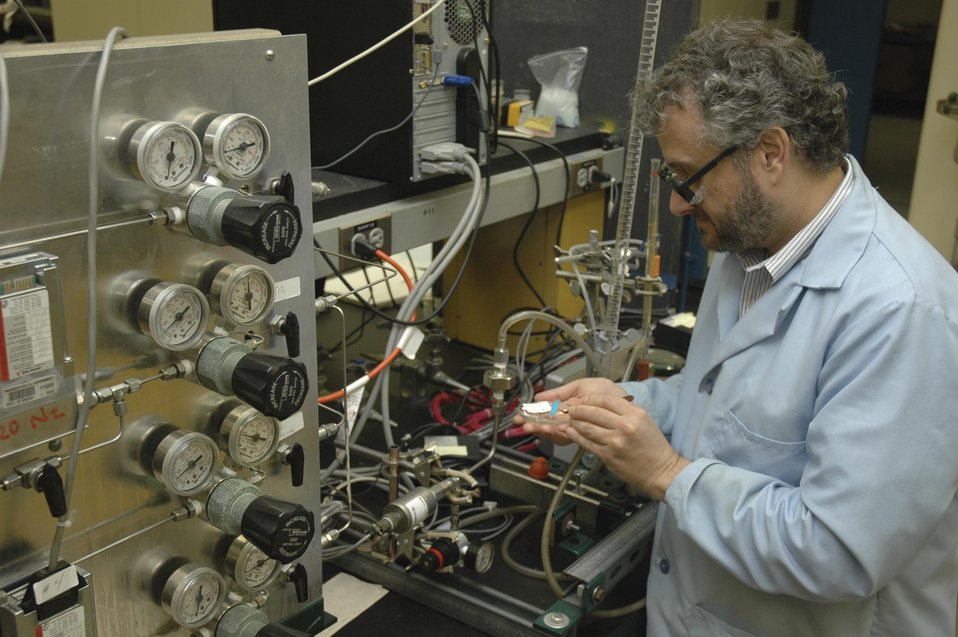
Michael Schwartz, a National Research Council fellow working at NETL, prepares a sample of the metal organic frameworks (MOF) membrane.
At NETL research have prepared and tested a novel gas separation membrane based on advanced materials called metal organic framework. MOF's are high porous compounds that recently aroused great interest because of their potential to absorb and separate gases such as carbon dioxide. Tests of the membrane show that carbon dioxide moves though the pores by a surface diffusion mechanism. This means the absorption and movement of carbon dioxide along the inner surface of the micro-pore allow it to move through the membrane at a faster rate than expected for a gas that is not readily absorbed. The results encourage further development of membranes that can meet the pressing demands to separate carbon dioxide from flue gases or from mixtures of other gases encountered in fuel production.